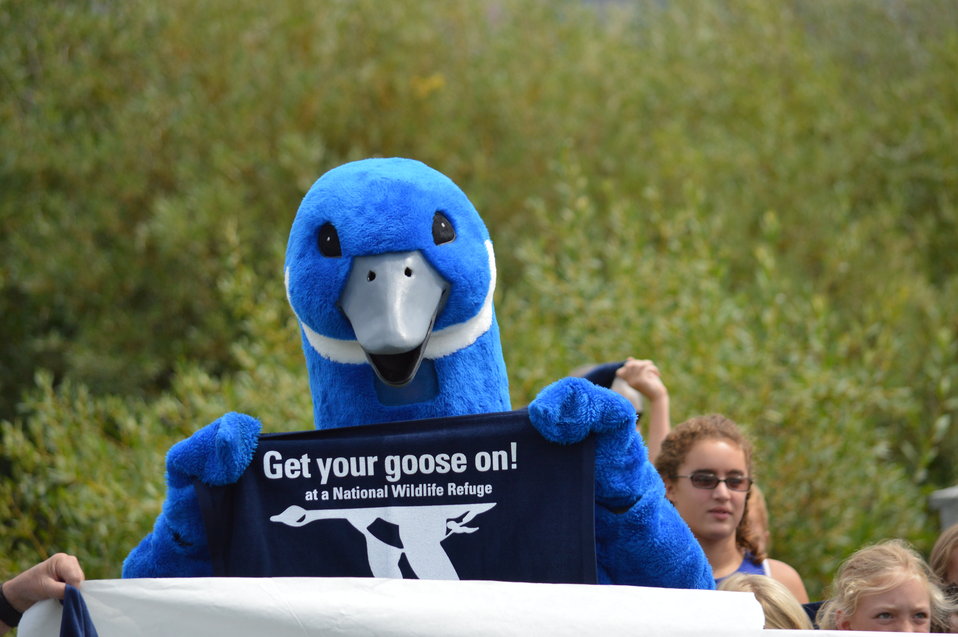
Get Your Goose On! - National Elk Refuge Style

On August 10, 2012 the U.S. Fish and Wildlife Service and Partners celebrated the 100 year anniversary of the establishment of the National Elk Refuge. In these photos, young attendees, along with Puddles the Blue Goose and the National Elk Refuge's mascot, showed us how to Get Your Goose On! with style.